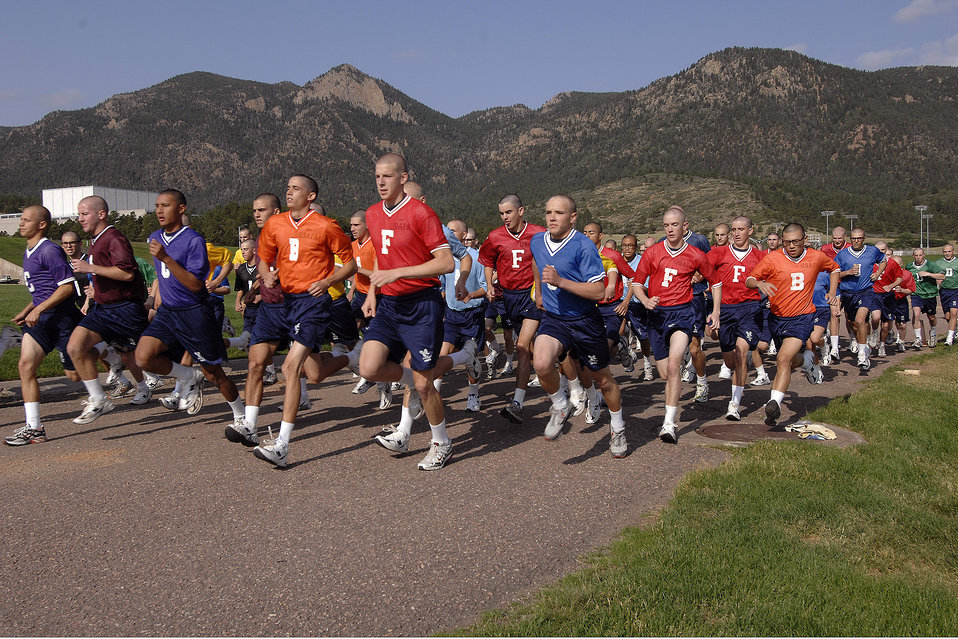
Academy basic cadets team up for Field Day

U.S. Air Force Academy basic cadet trainees take off at the start of a distance run during Field Day July 12 at the Academy's athletic fields in Colorado Springs, Colo. After being greeted by Academy leaders, they competed in various athletic events, and closed out the morning with a parachute demonstration by the Academy's Wings of Blue parachute demonstration and competition team.